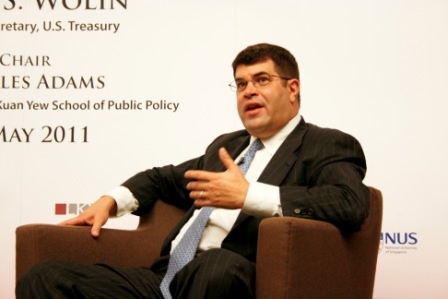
Deputy Secretary Wolin's Trip to the Pacific Rim

On Friday, May 20, 2011, Deputy Secretary Wolin was in Singapore to deliver remarks at a lecture organized by the NUS Lee Kuan Yew School of Public Policy on the United States’ longstanding commitment to welcoming investment from abroad.